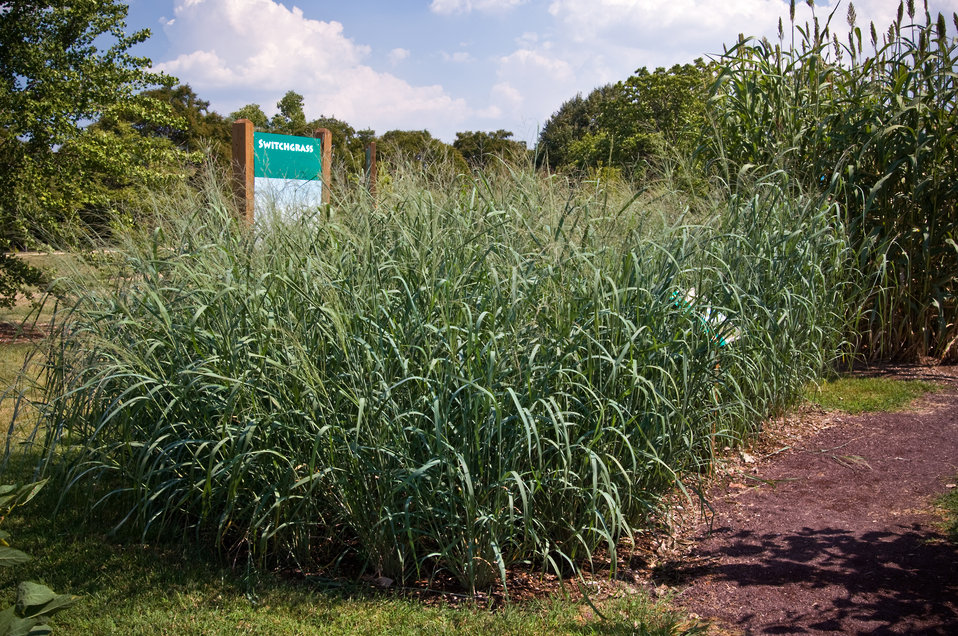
The Power Plant garden at the National Arboretum in Washington, D.C.,displays a variety of plants that may provide a valuable and renewable source of bioenergy for America. Bioenergy is renewable energy made available from materials derived from biological sources. Switchgrass is both a perennial and self-seeding crop and farmers do not have to plant and reseed after annual harvesting. An established switchgrass stand can survive for ten years or longer. Unlike corn, switchgrass can grow on marginal lands and requires relatively modest levels of chemical fertilizers. It is considered a resource-efficient, low-input crop for producing cellulosic ethanol. This photograph shows switchgrass growing in the Power Plant garden at the National Arboretum in Washington; D.C. on August 19, 2008.